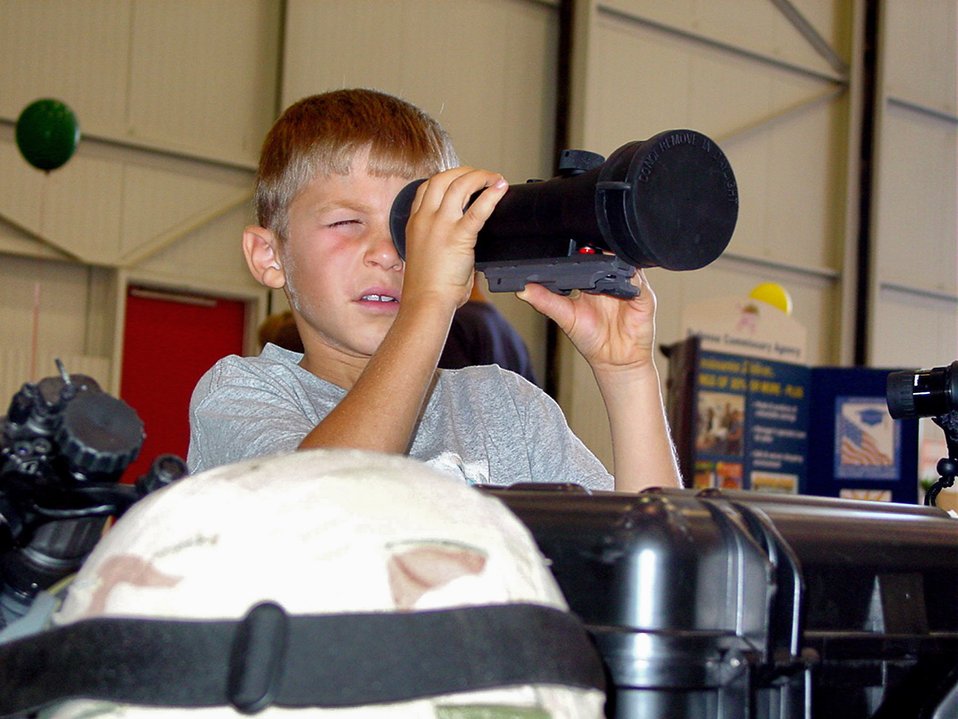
Open house

BEALE AIR FORCE BASE, Calif. (AFPN) -- Joshua Pelletier looks through a scope at a display in during military family day here.